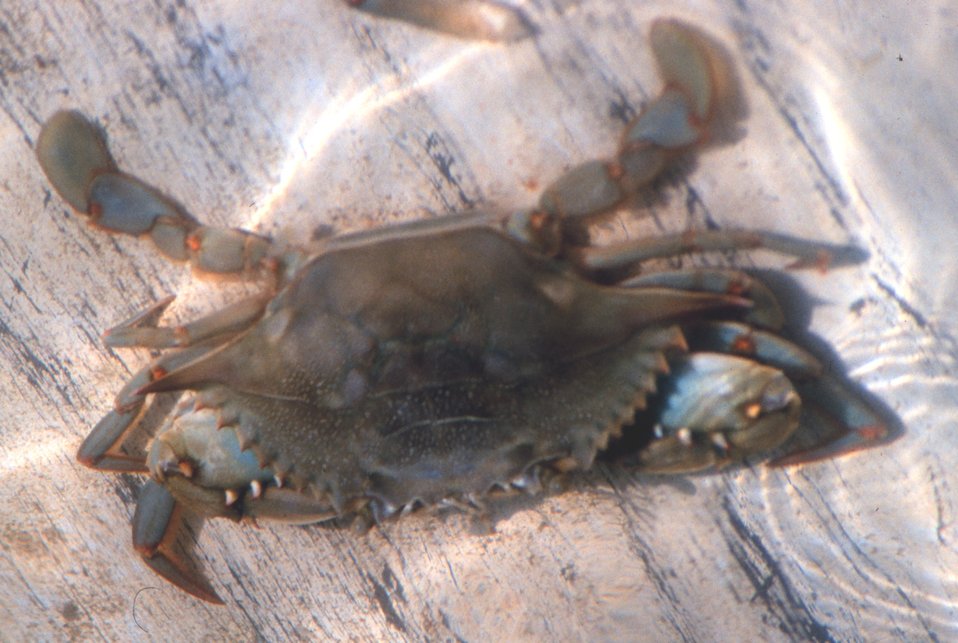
A 'peeler' crab (female). It will shed its shell within an hour.